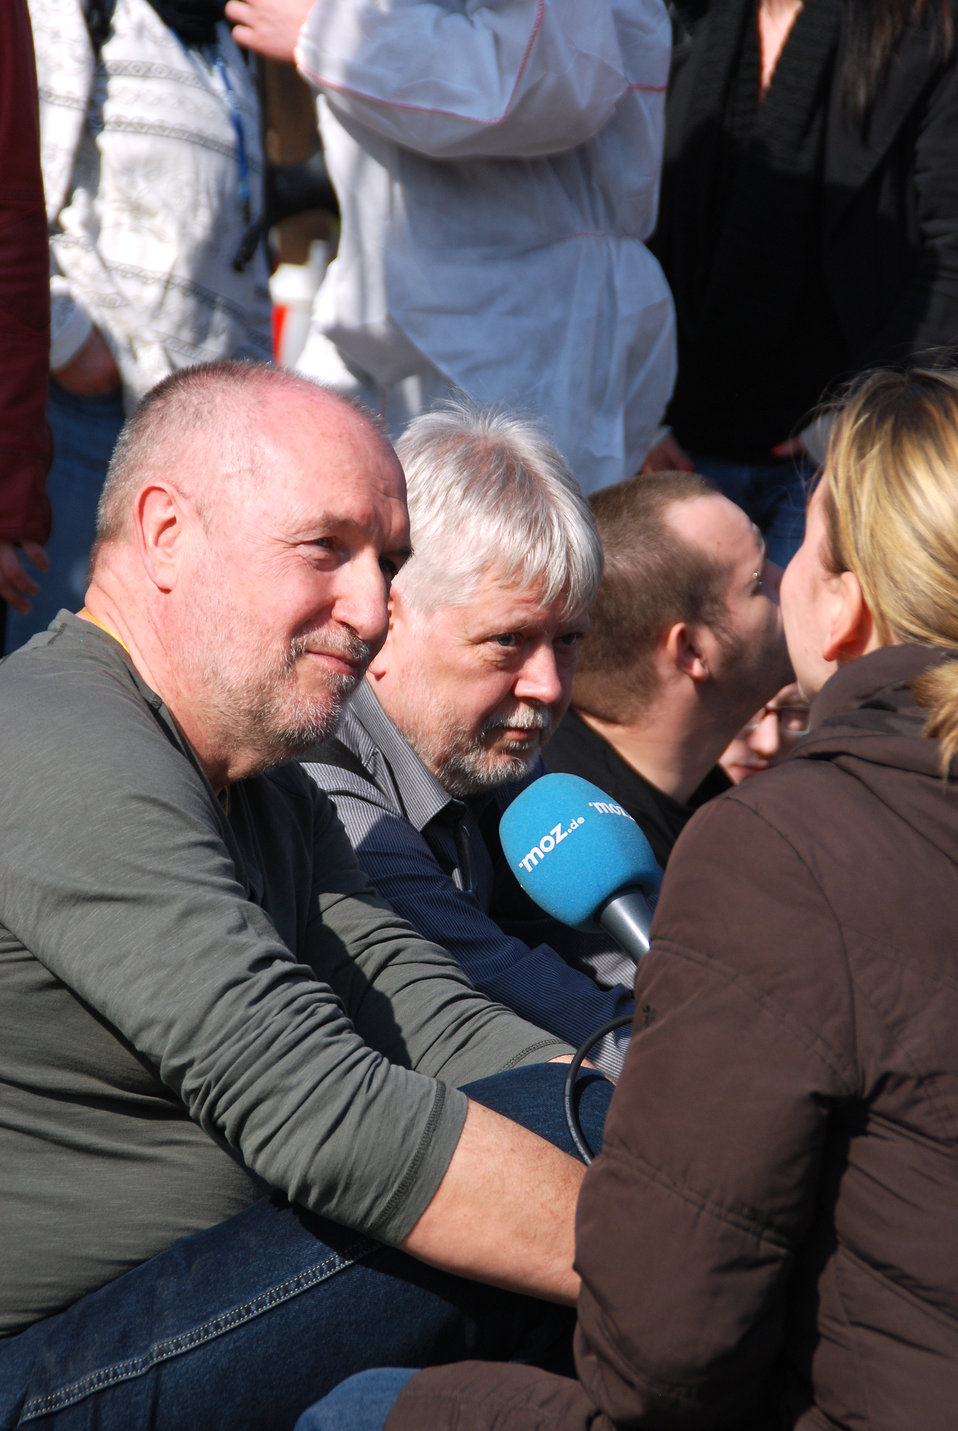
Proteste gegen den Nazi-Aufmarsch am 24.3.2012 in Frankfurt (Oder), mit Helmuth Markov, Finanzminister des Landes Brandenburg und Axel Henschke, Mitglied des Landtages Brandenburg